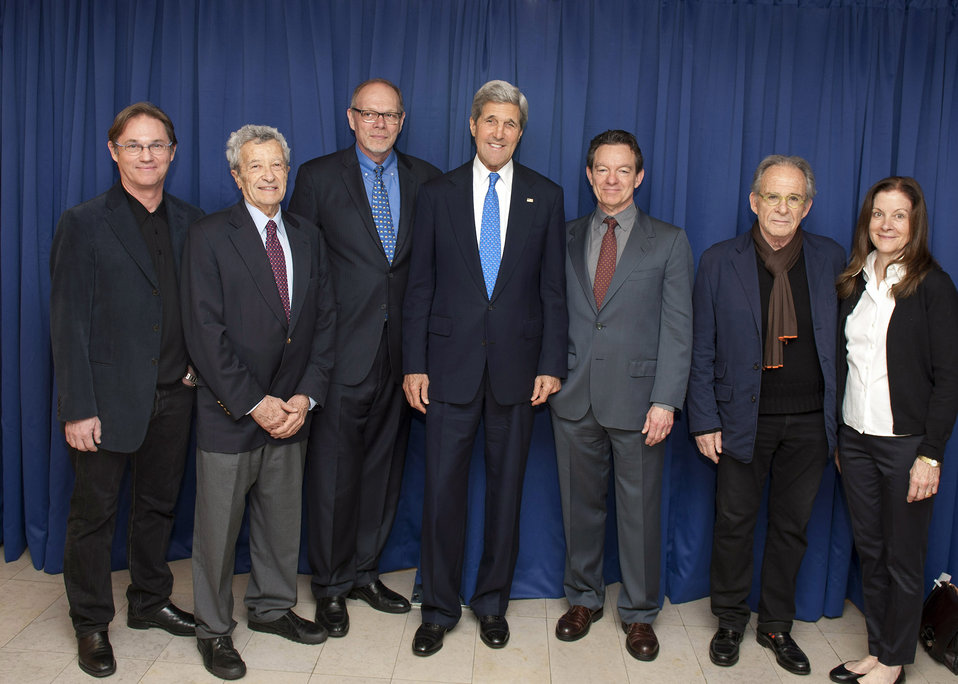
Secretary Kerry Meets With 'Camp David' Actors

U.S. Secretary of State John Kerry poses for a photo with actors from the play 'Camp David' who are participating in the Secretary’s Open Forum at the U.S. Department of State in Washington, D.C., on April 29, 2014.